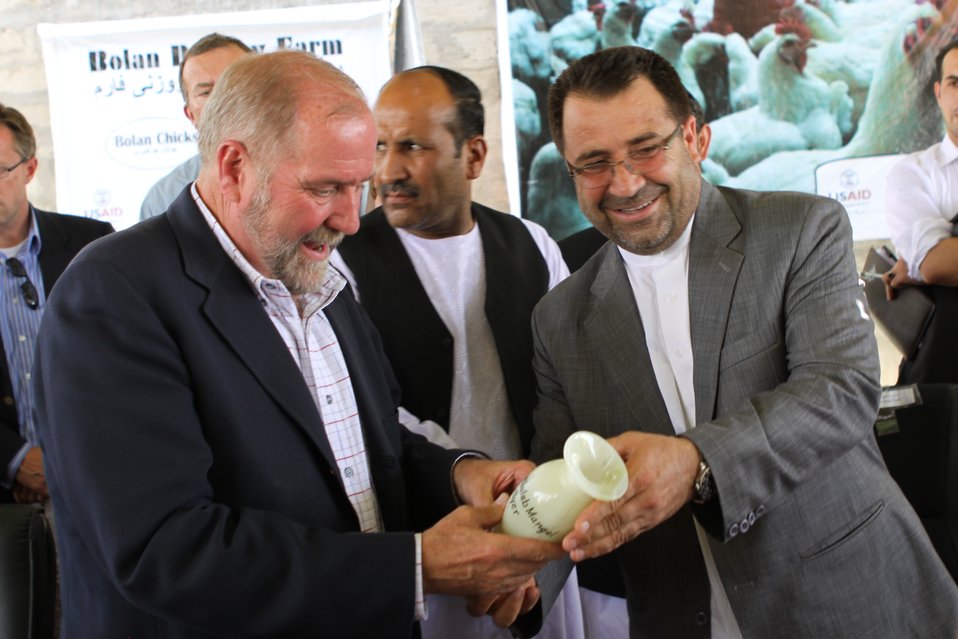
Bolan Poultry Farm